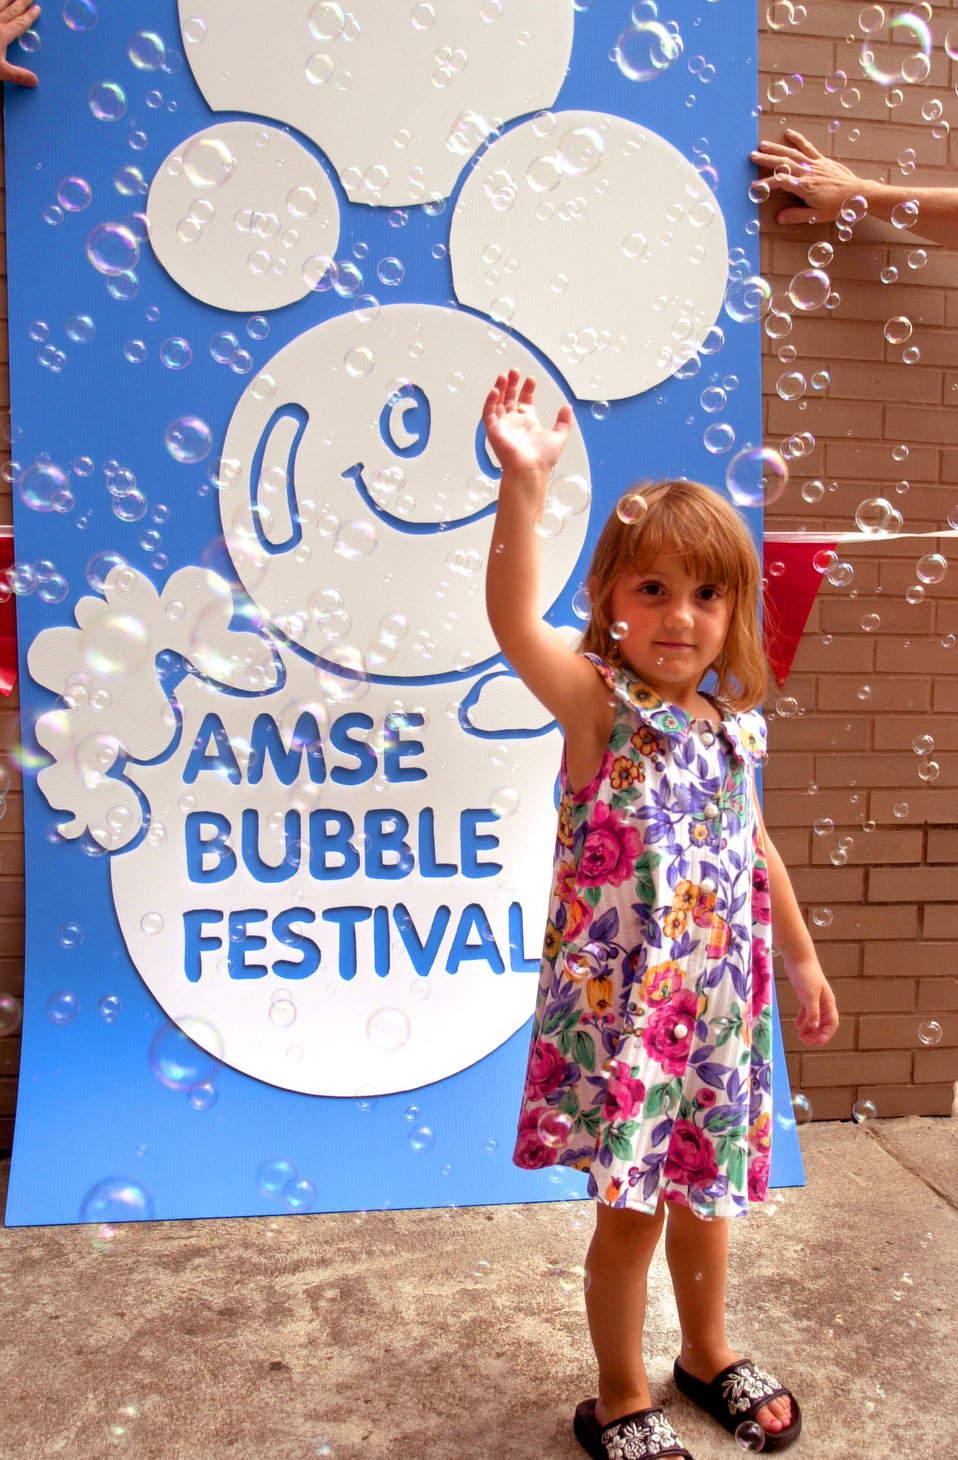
AMSE American Museum of Science and Energy Bubble Festival Oak Ridge

00-283-036 DOE photo by Lynn Freeny Oak Ridge, Tennessee 7-15-2000